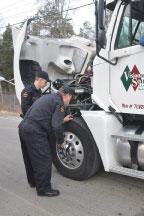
TRU Shipments to WIPP

Tennessee State Troopers conduct a rigorous safety inspection of the Department of Energy’s Remote-Handled Transuranic Waste prior to shipment from Oak Ridge.